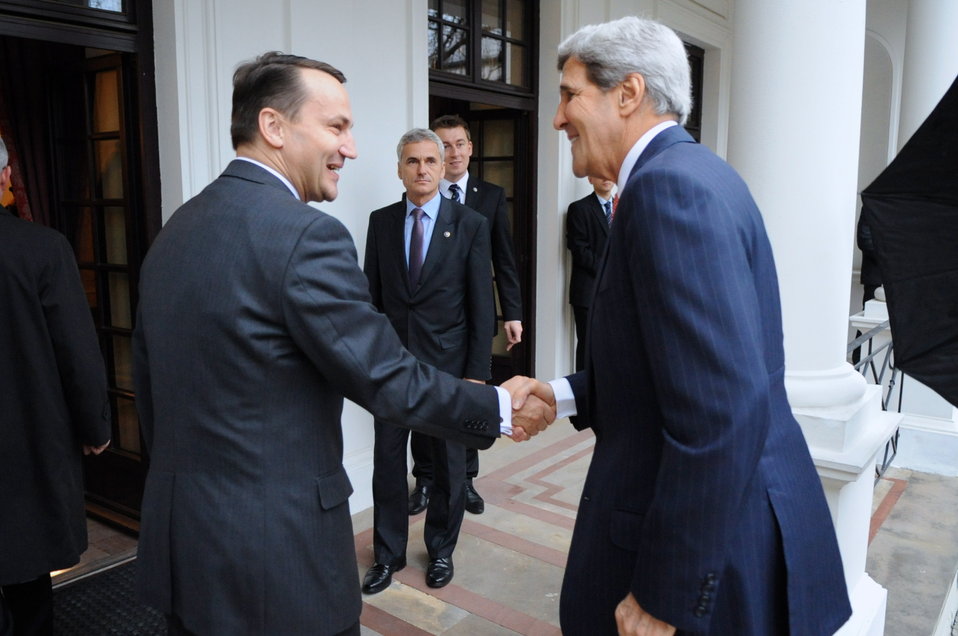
Polish Foreign Minister Sikorski Welcomes Secretary Kerry to Warsaw

Polish Foreign Minister Radoslaw Sikorski welcomes U.S. Secretary of State John Kerry to a meeting at the Foksal Palace in Warsaw, Poland, on November 5, 2013.